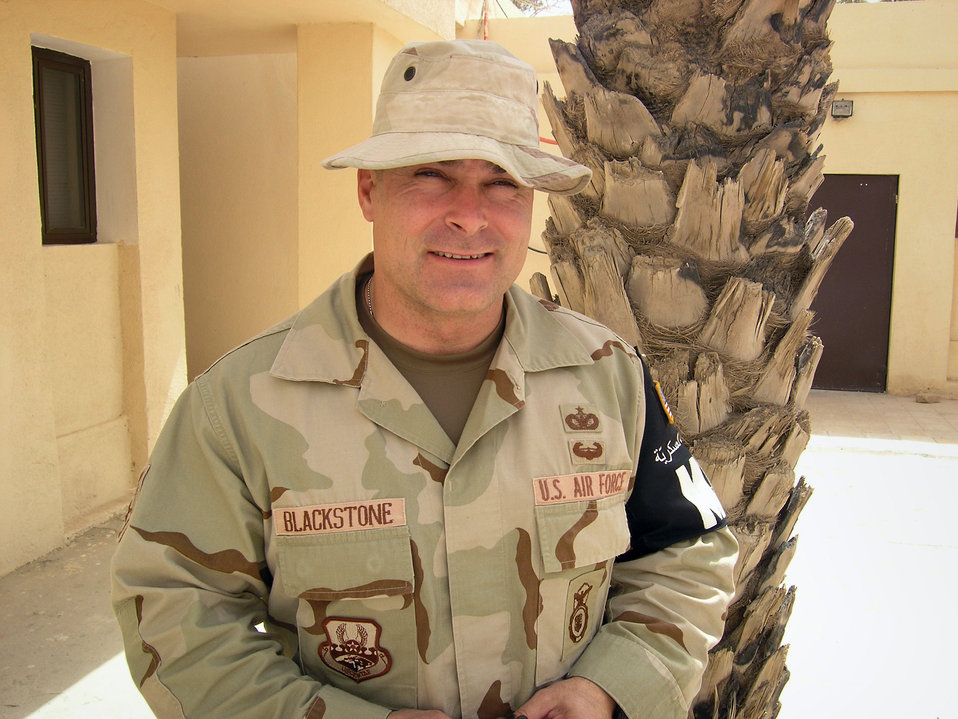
Airmen serve in Iraq to honor 9/11 victims

ALI BASE, Iraq -- Staff Sgt. Richard Blackstone came back into the military after witnessing the deaths of victims of Sept. 11, 2001 on television. He volunteered to deploy here with the 407th Expeditionary Security Forces Squadron and is from Seymour Johnson Air Force Base, N.C.